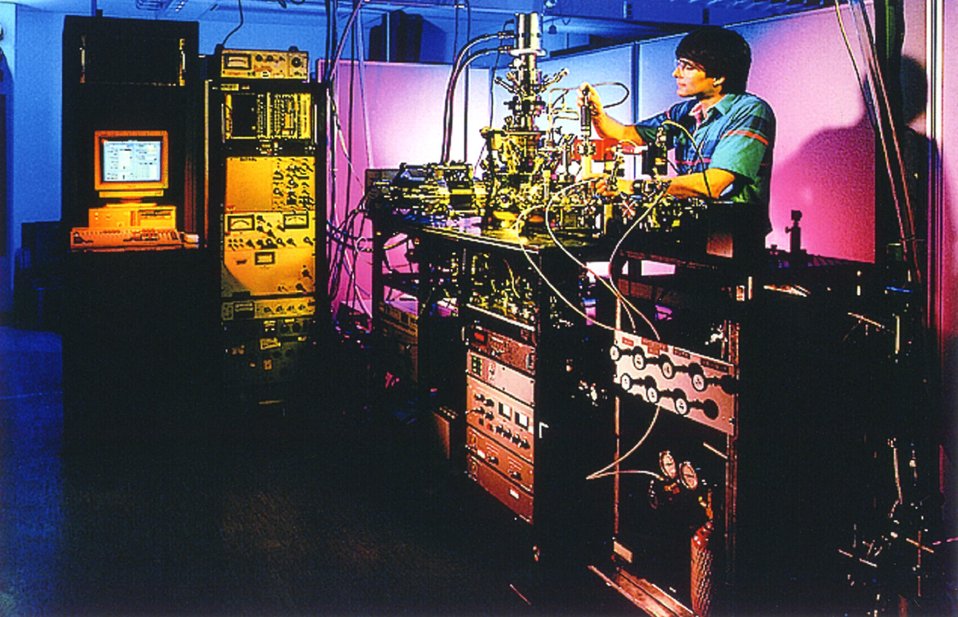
PNNL'S ELECTRON STIMULATED SURFACE REACTION APPARATUS.

THE ELECTRON STIMULATED SURFACE REACTION APPARATUS IS USED BY SCIENTISTS AND THEIR COLLABORATORS AT THE WILLIAM R. WILEY ENVIRONMENTAL MOLECULAR SCIENCES LABORATORY TO STUDY NONTHERMAL REACTIONS THAT OCCUR ON SURFACES OR AT INTERFACES.